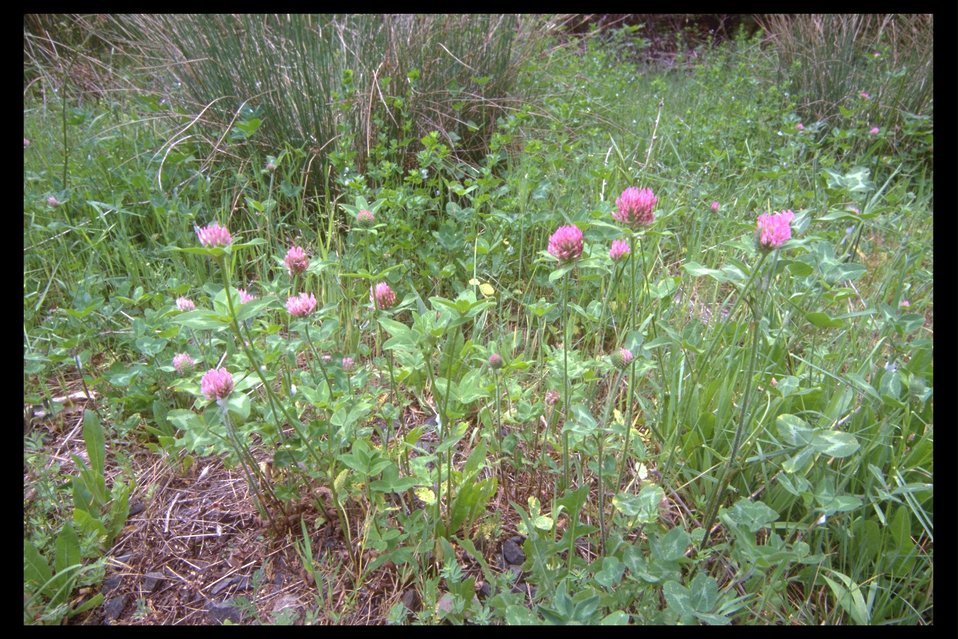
Red Clover (Trifolium pratense) found along Upper Trail Creek. Part of a roadside seeding for stabilization.